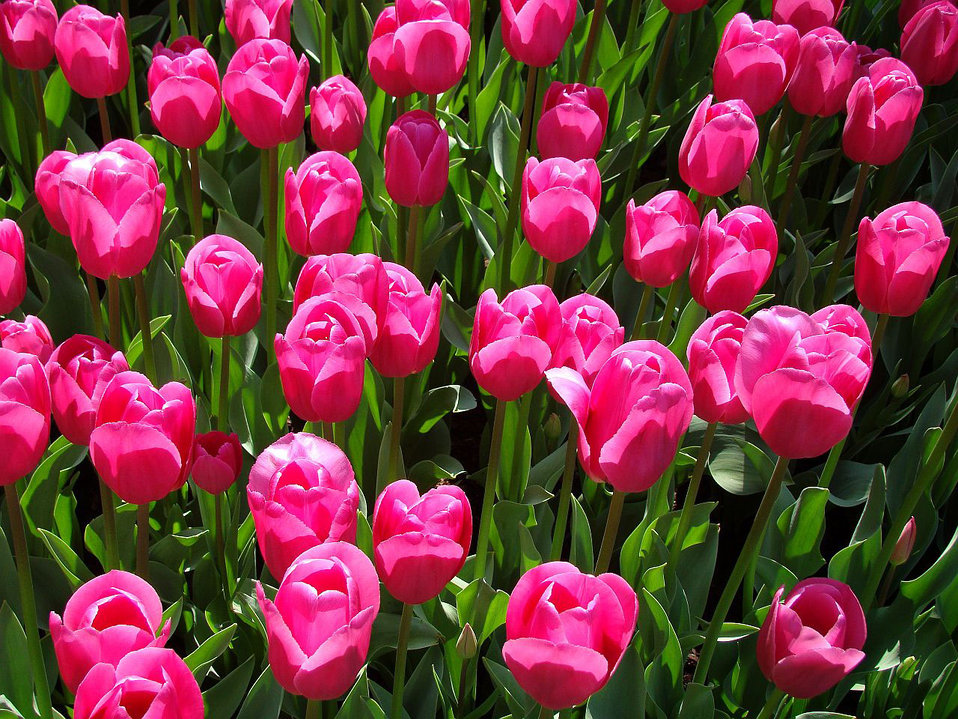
Tulips

Fresh spring tulips.